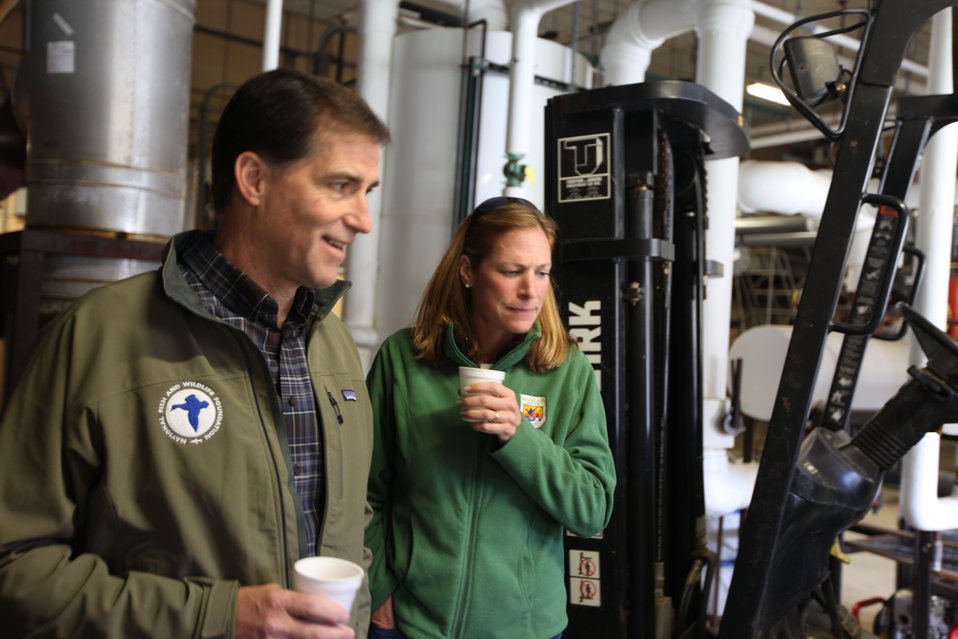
Dan Ashe and Wendi Weber on a tour of the hatchery

U.S. Fish & Wildlife Service Director Dan Ashe visits the Northeast Region
for a tour of the White River National Fish Hatchery in Bethel, Vermont on
April 27, 2012. The hatchery was devastated by Tropical Storm Irene and
Dan Ashe had the chance to meet and thank the staff for their heroic work.
Director Ashe also visited restoration/flood response/fish passage project
sites in Rochester, Vermont and met with local officials and staff from the
White River Partnership.